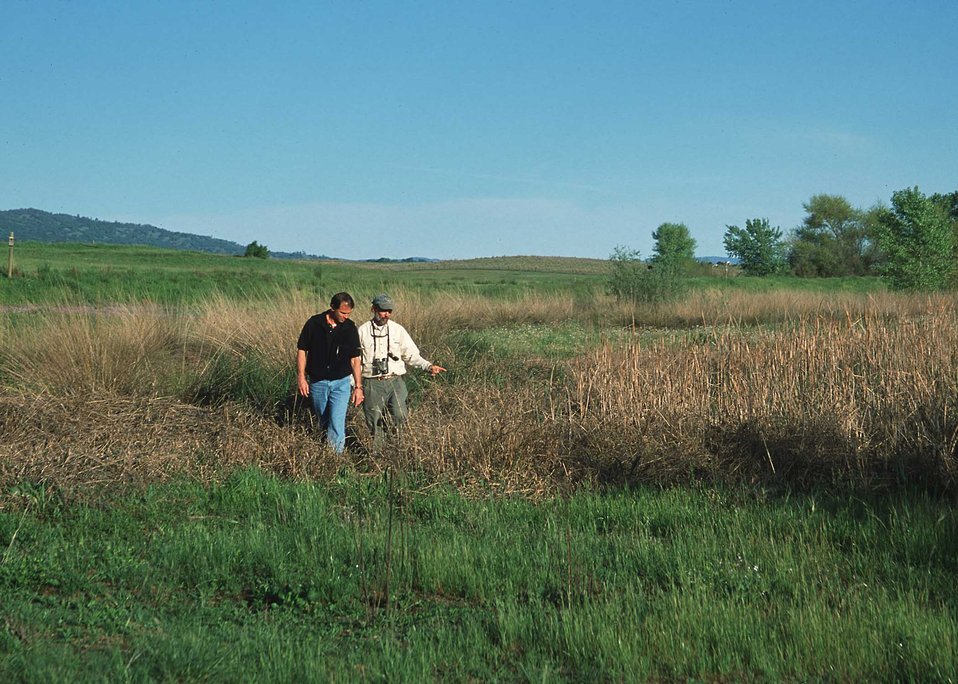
NRCS conservationist and Yolo County farmer inspect a native grass planting near a restored wetland.